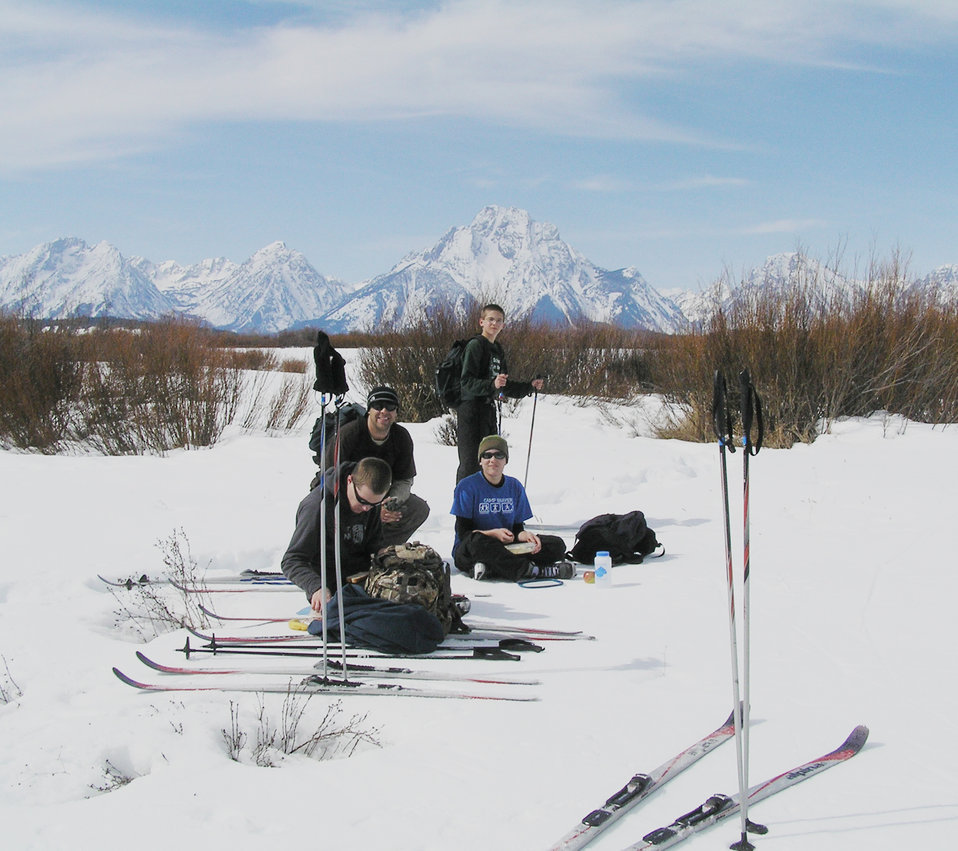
Operation Purple reconnects children, parents after deployments

Capt. Gregory Izdepski (center) and his family, Brent Wyatt (front), Jessica Wyatt (center right) and Alec Wyatt (back) take a lunch break in the Grand Teton National Park during Operation Purple Military Family Retreat March 20 in Jackson, Wyo. The camp, sponsored by National Military Family Association, is free and designed for families to reconnect after a parent has been deployed.